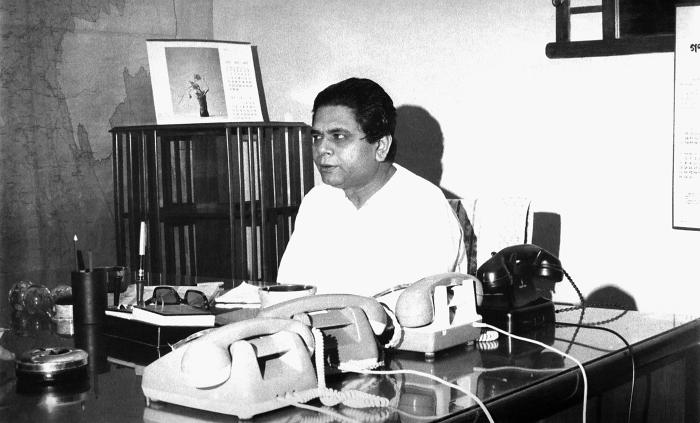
Though his name is unknown, this 1975 photograph depicted one of the Bangladesh Secretaries of Health, as he was seated behind his desk during a meeting with members of the smallpox eradication campaign. Integral to the success of the eradication efforts in Bangladesh, was convincing the governmental hierarchy of the need to carry out such a monumental undertaking on a country-wide scale, which at times was initially met with skepticism, but with the actualization of positive results, was soon adopted by all as the one and only way to finally rid Bangladesh, and for that matter, the entire world of this dreaded virus.